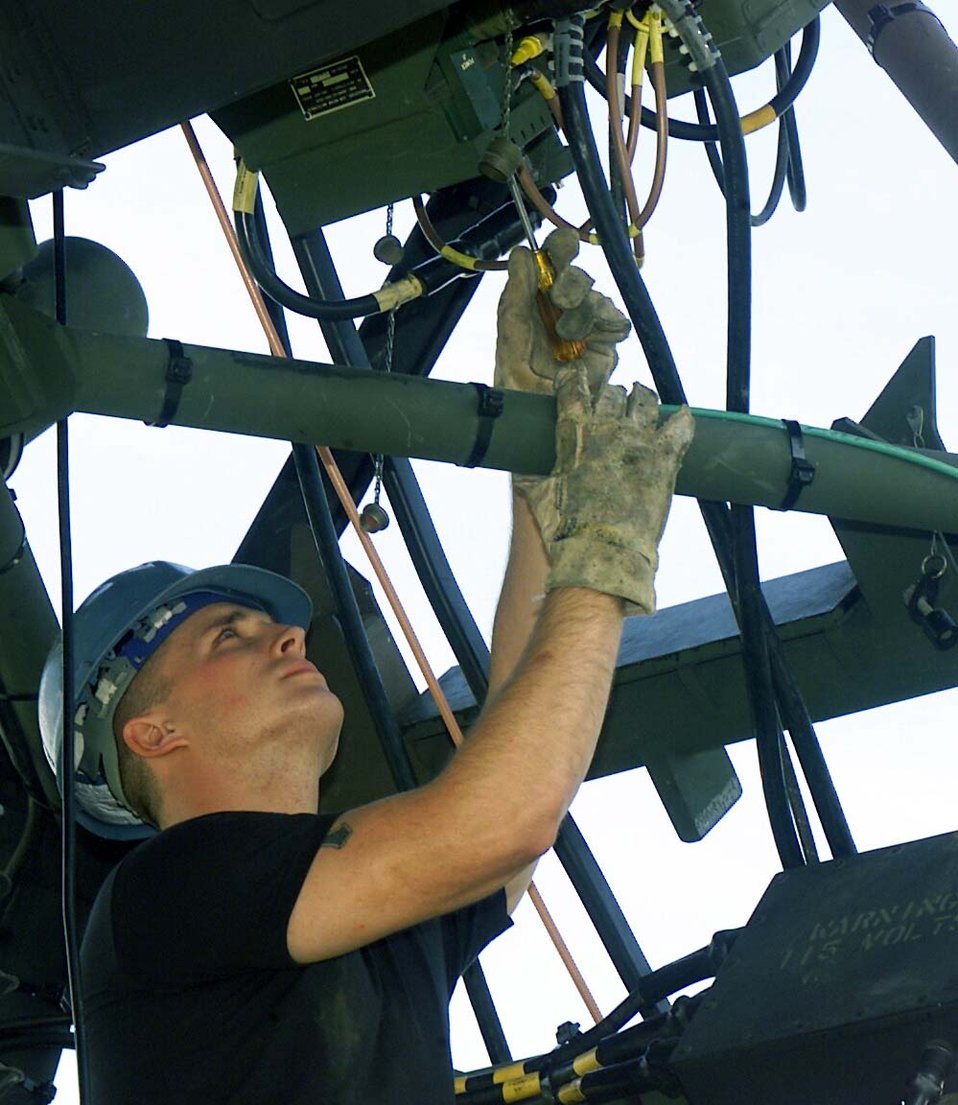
Maintaining satellites

GWANGJU AIR BASE, South Korea -- Senior Airman Christopher Gremling performs daily maintenance on a tactical satellite terminal here Sept. 8. Airman Gremling is a satellite communications technician assigned to Camp Humphreys, South Korea.